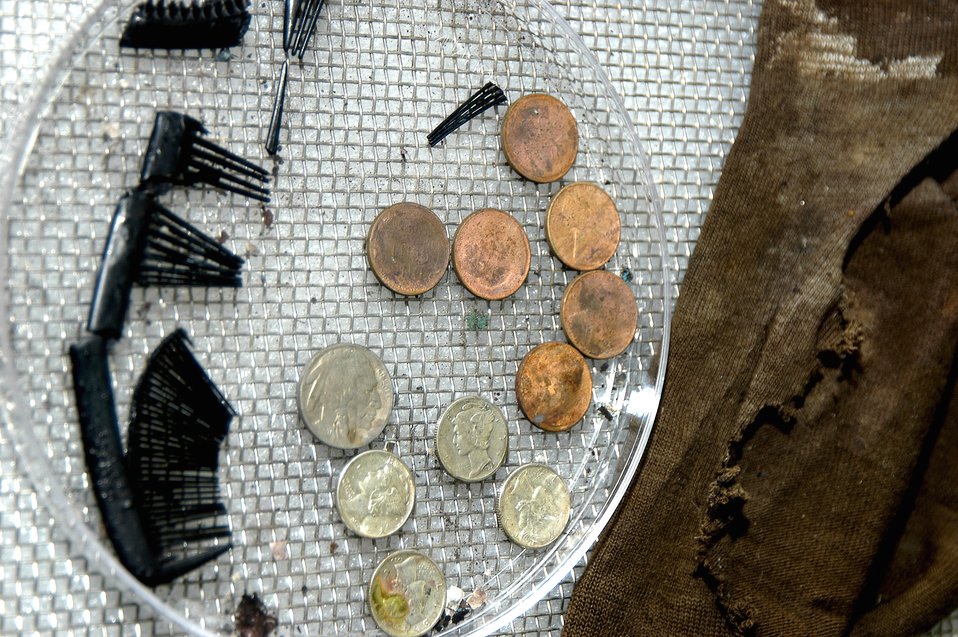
Frozen Airman

HICKAM AIR FORCE BASE, Hawaii (AFPN) -- Joint POW/MIA Accounting Command scientists are working to identify an Airman who was found Oct. 16 on Mount Mendel in Kings Canyon National Park, Calif. The unidentified Airman arrived at JPAC Oct. 24 still wearing a World War II-era parachute, with a comb, various coins and other personal effects in his pockets. Investigators at JPAC searched the records of men lost during World War II and found that between 25 and 30 military planes crashed on training missions in California during these years. They have narrowed the list of possible Airmen to four who disappeared during a training mission on Nov. 18, 1942.